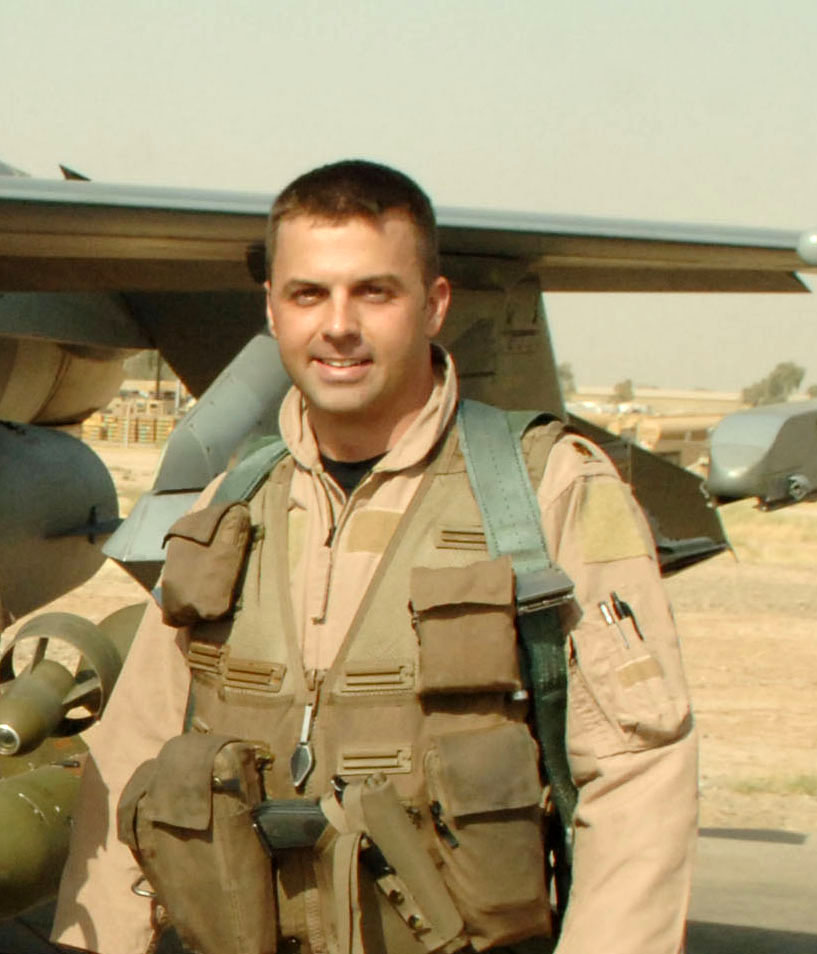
Luke rallies to support downed pilot's family

Maj. Troy Gilbert, an F-16 Fighting Falcon pilot was killed Nov. 27 in an F-16 crash 30 miles southwest of Balad Air Base, Iraq. Major Gilbert was the standardization and evaluation chief for the 332nd Expeditionary Operations Group and was deployed from the 309th Fighter Squadron from Luke Air Force Base, Ariz. A memorial service was held Dec. 3 at Balad AB, and a remembrance ceremony was held Dec. 6 at Luke AFB.